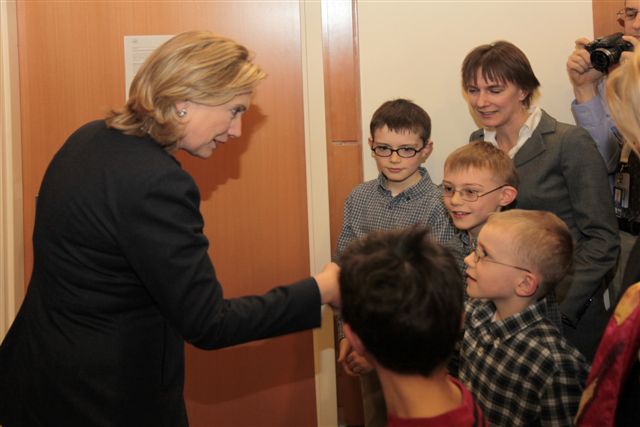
Secretary Clinton Greets Members of the U.S. Embassy Astana Staff

U.S. Secretary of State Hillary Rodham Clinton greets members of the U.S. Embassy Astana staff and their families in Astana, Kazakhstan, on December 1, 2010.